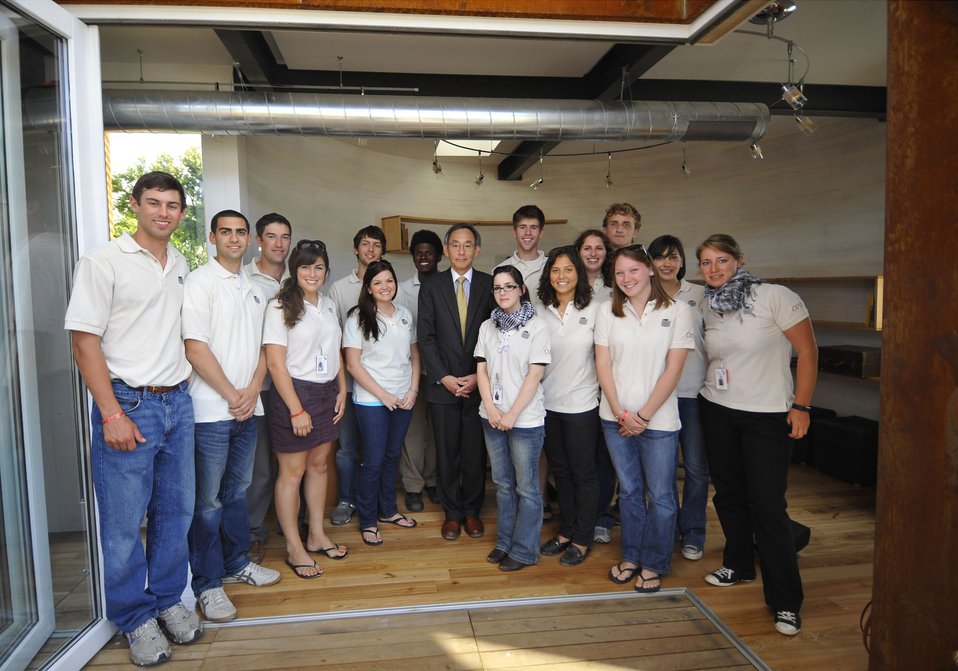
Solar Decathlon 2009 on the National Mall, with Sec. Chu

Solar Decathlon 09